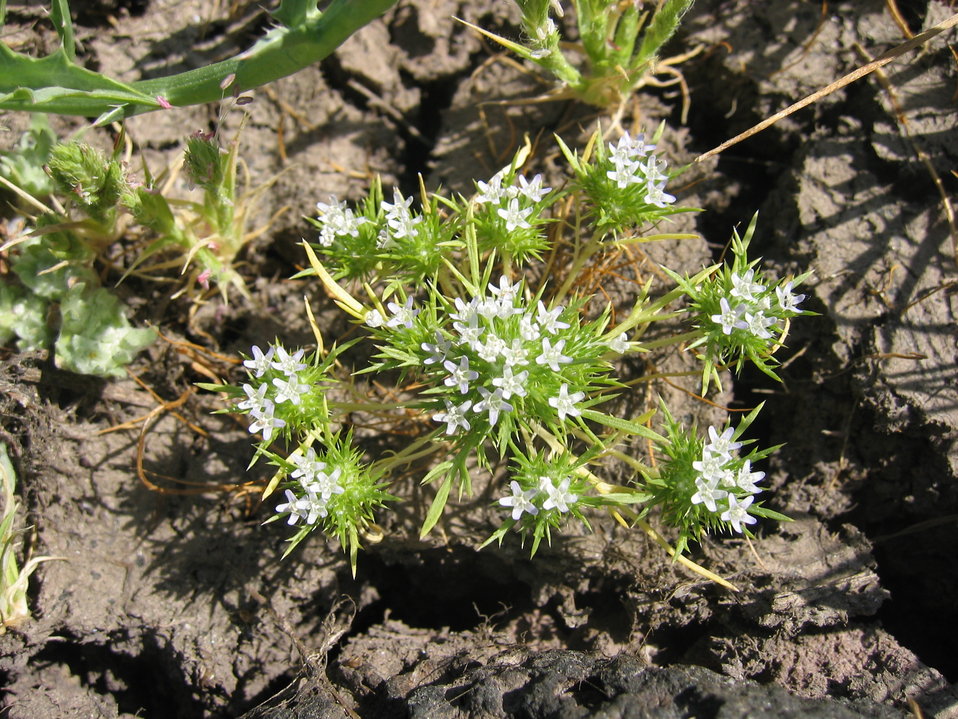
Spreading Navarretia Plant

Navarretia fossalis (spreading navarretia), a federally threatened plant, is photographed at Mesa de Burro on the Santa Rosa Plateau Ecological Reserve in Riverside County, CA. The Reserve is part of the Santa Ana Mountain Range located in southern California. This plant primarily occurs with vernal pools and in temporary wetlands. (Sally Brown/USFWS photo)